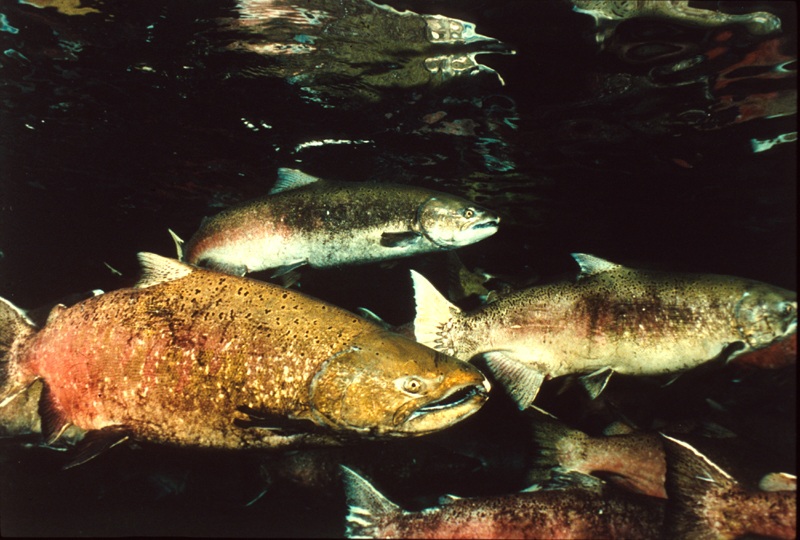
Salmon Cottonwood Field Office Lower Salmon River Upper Columbia-Salmon Clearwater District Fish UCSC Upper Columbia Salmon Clearwater District